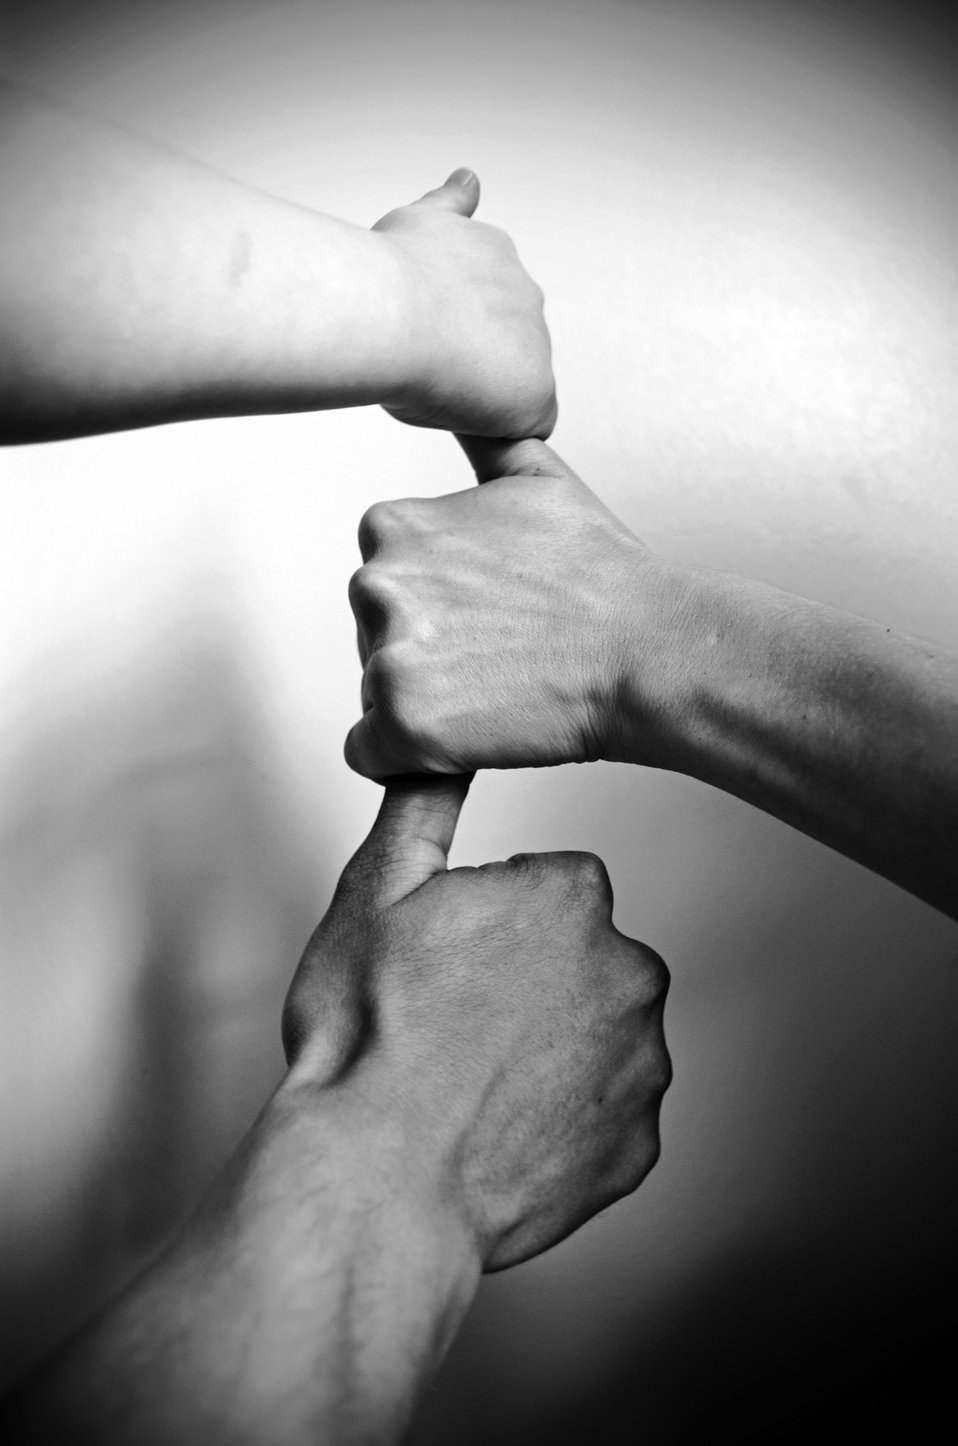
Hand, hand, hand

Hand, hand hand.